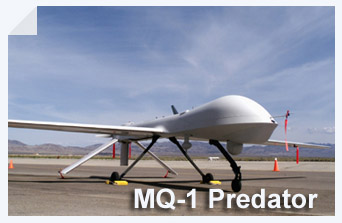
MQ-1 Predator

The MQ-1 Predator is a medium-altitude, long-endurance unmanned aircraft system. The fully operational system consists of four air vehicles (with sensors), a ground control station and a Predator primary satellite link communication suite.